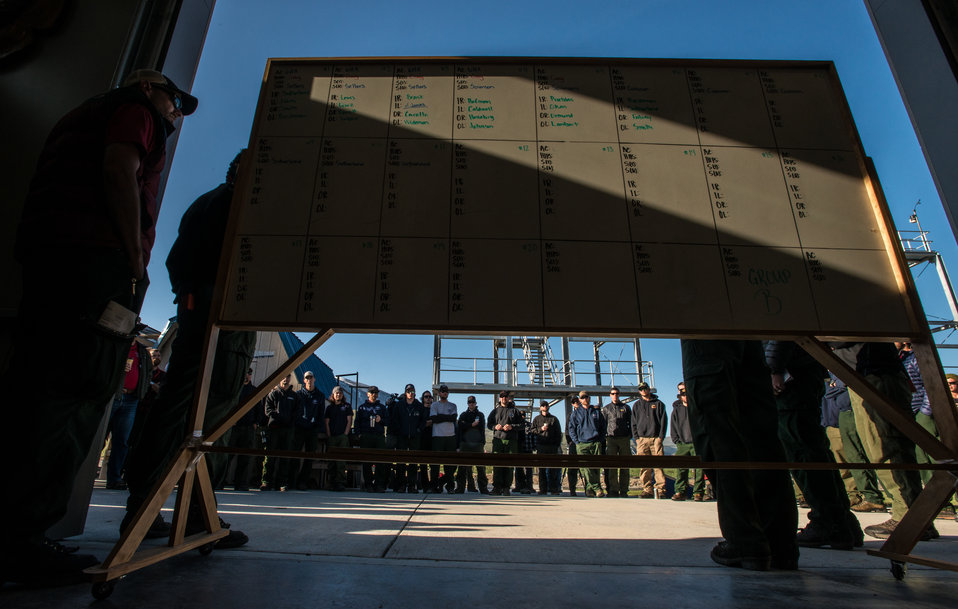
Veteran wildland firefighter rappellers pay attention to the morning meeting at the U.S. Department of Agriculture (USDA) U.S. Forest Service (USFS) National Helicopter Rappel Program’s Rappel Academy at Salmon Air Base in Salmon, ID on Wednesday, May 14, 2014. From May 12, 2014, 72 veteran rappellers from all over the nation, 30 support staff, and three helicopters with flight crews attend the training at Salmon Air Base. Participants will rappel into the Perreau Creek area. The annual training is delivered in accordance with the National Rappel Operations Guide; strengthen leadership, teamwork, and communications within the rappel community, and produces quality aerial delivered firefighters for use in fire and aviation operations. The USDA Forest Service National Helicopter Rappel Program’s primary mission is initial attack. Rappel crews may be utilized for large fire support, all hazard incident operations, and resource management objectives.